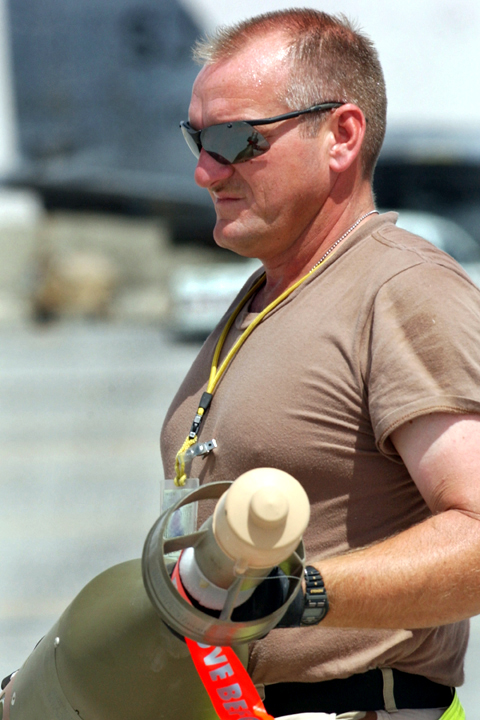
Strong man

OPERATION IRAQI FREEDOM -- Chief Master Sgt. Jack L. Adams, Maintenance Chief assigned to the 379th Air Expeditionary Wing, helps troops out on the flightline on a daily basis. Adams is carrying a guidance unit for a GBU-12 being loaded on F-15E Strike Eagles at this forward deployed location in the Gulf region in support Operation IRAQI FREEDOM